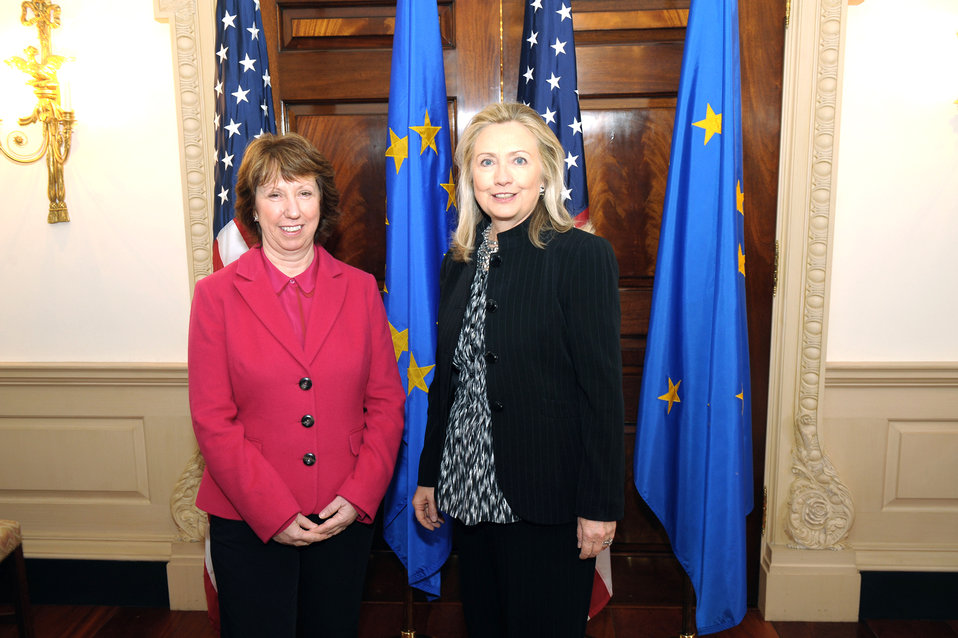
Secretary Clinton Meets With EU High Representative Ashton

U.S. Secretary of State Hillary Rodham Clinton meets with European Union High Representative Catherine Ashton at the U.S. Department of State in Washington, D.C., on November 28, 2011.